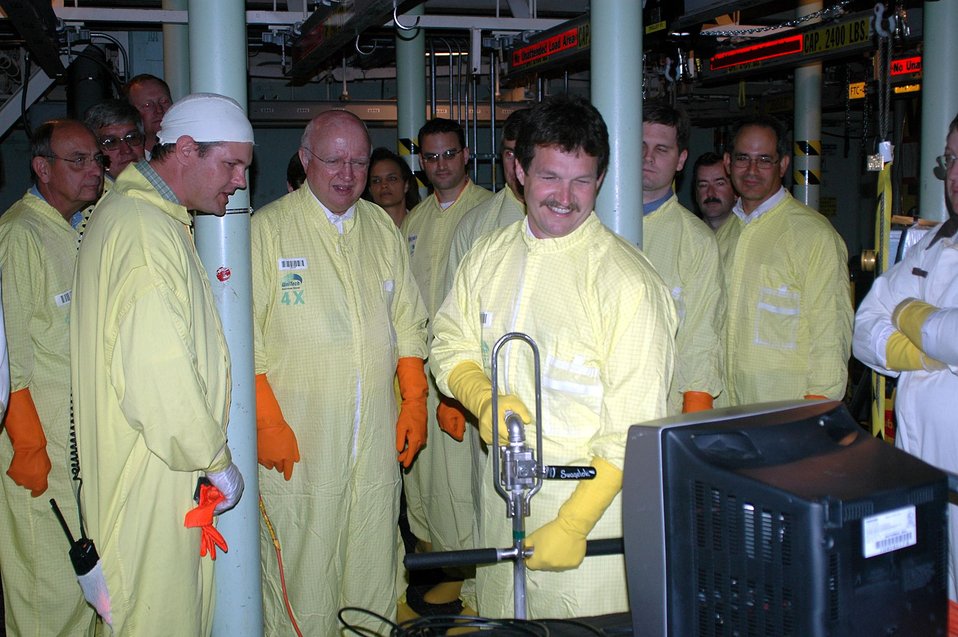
Secretary Bodman visited the K East Basins at the Hanford site with Congressman Hastings and Keith Klein. Under first line supervision M. Precechtel, Deputy Assistant Secretary for Environmental Management C. Anderson.

On June 2, 2005, Secretary Bodman visited the K Basins at the Hanford Site, with Charlie Anderson, EM, and Congressman Richard Hastings accompanied the Secretary during the tour of facility and pumped sludge under the supervision of the K East Basin Nuclear Chemical Operators.